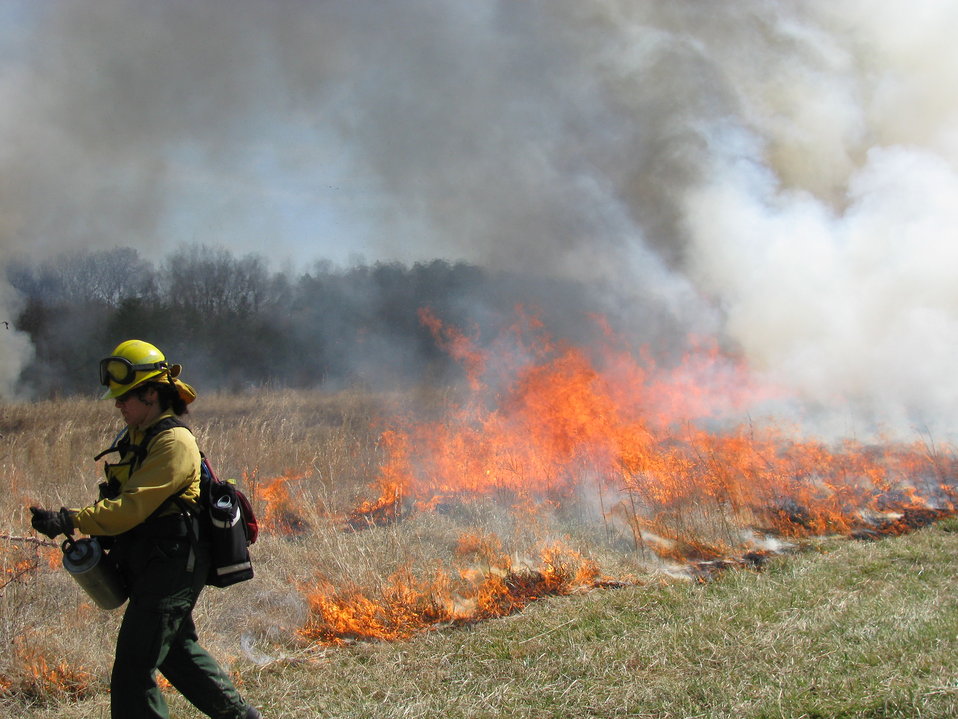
TNC Firefighter at Patuxent Research Refuge

Laurel, Maryland, April 14, 2012: Deborah Landau of the Maryland Chapter of The Nature Conservancy was among the many partners on hand to do a controlled burn. The burn, at Patuxent Research Refuge, was to maintain native grasslands, remove woody vegetation, and control invasive species such as Korean Lespedeza.